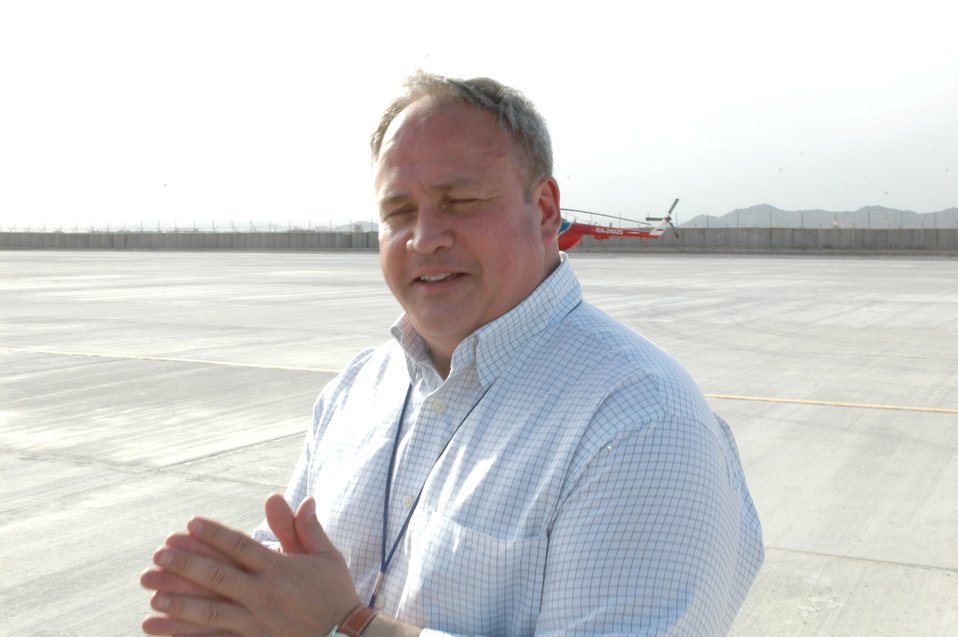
Dr Shah Visits Argandab April 10, 2010